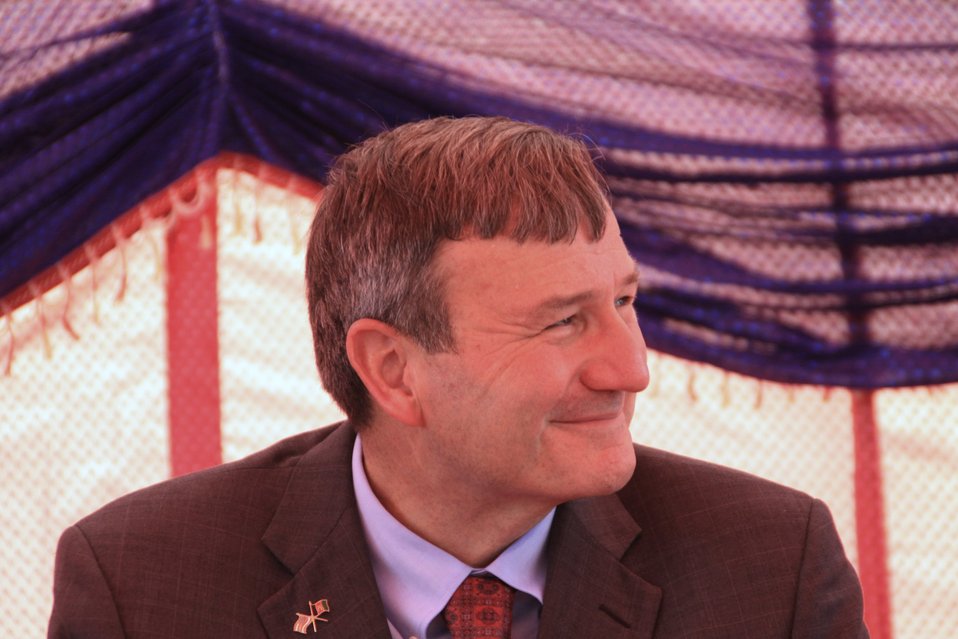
Badam Bagh Farm